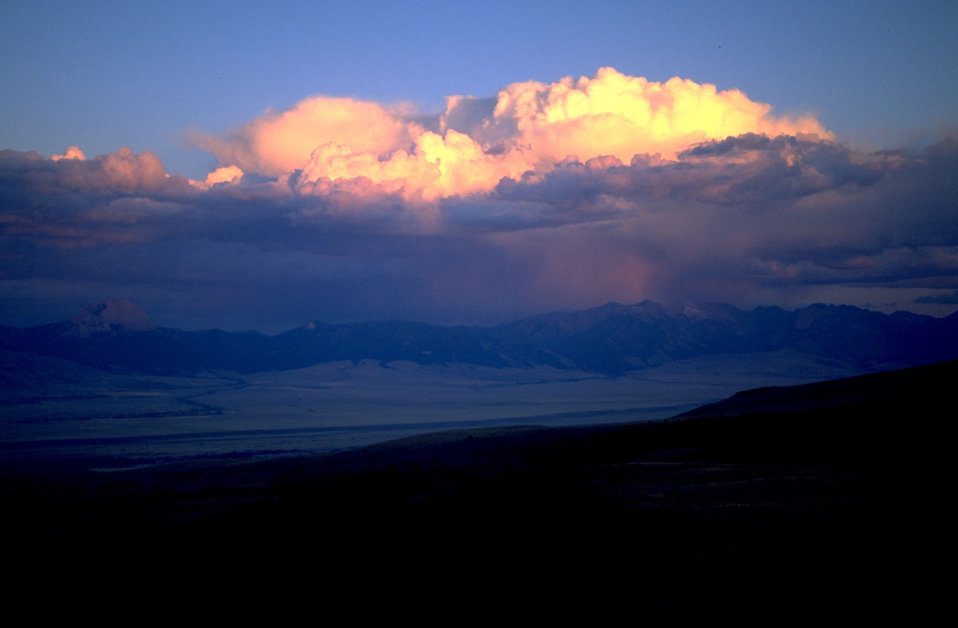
Clouds across Madison Valley at sunset